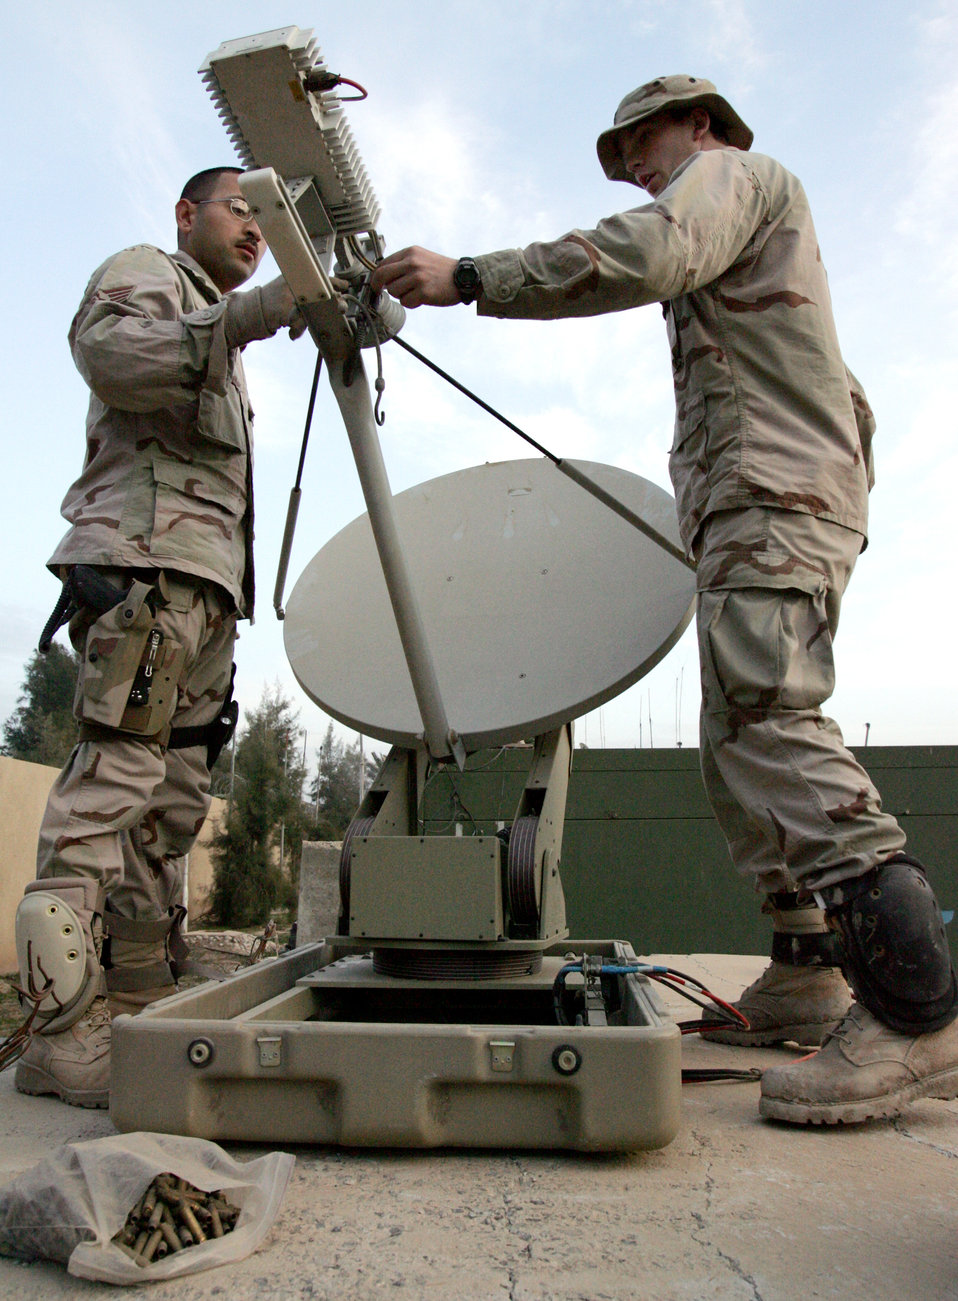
Satellite connection

CAMP FALLUJAH, Iraq (AFPN) -- Staff Sgt. David Deleon and 1st Lt. Kelly McGann re-connect the joint combat camera imagery transmission satellite system after replacing some parts Feb. 13.